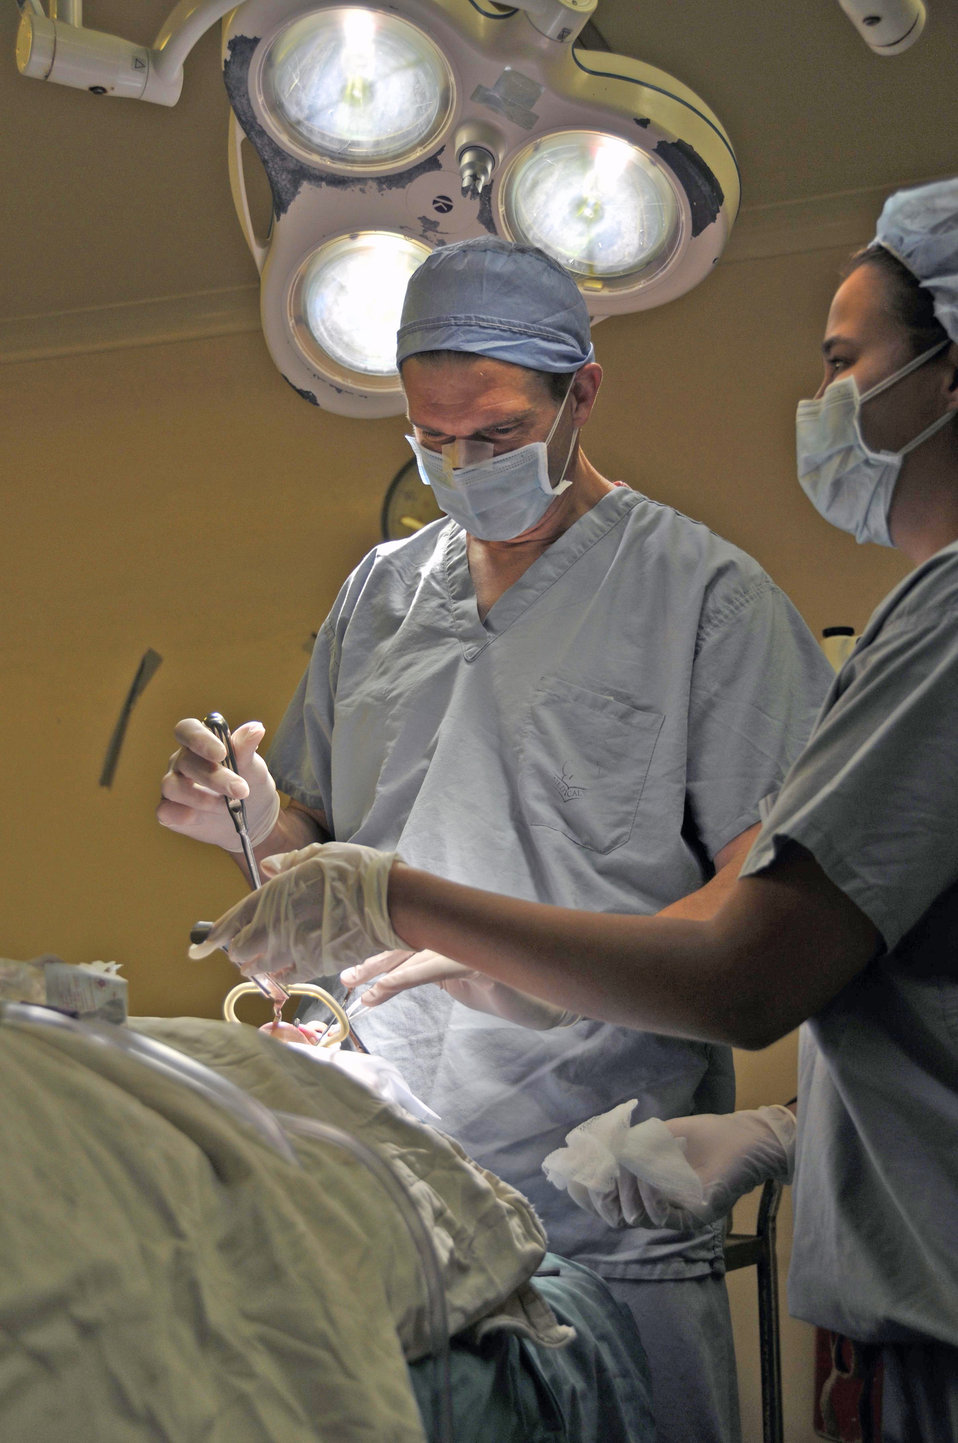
New Horizons Guyana 2009 comes to a close

Lt. Col. Mark Packer prepares a patient for surgery Aug. 6, 2009, at the Georgetown Public Hospital in Georgetown, Guyana. Colonel Packer is one of the sub-specialists for medical conditions of the ear, nose and throat that deployed here to provide free medical care to the Guyanese citizens. Colonel Packer is a neuro-otologist from the 59th Medical Wing at Wilford Hall at Lackland Air Force Base, Texas.